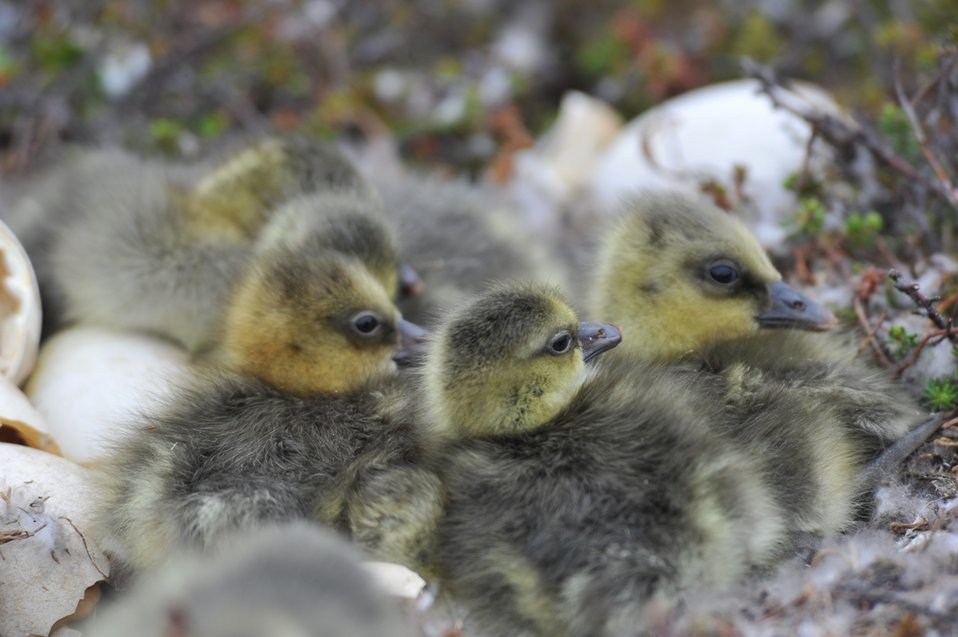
Cackler Goslings

Hatch usually occurs near the end of June on the Delta. The time of hatch will vary depending on when break-up occurs in the spring.

USFWS Yukon Delta NWR